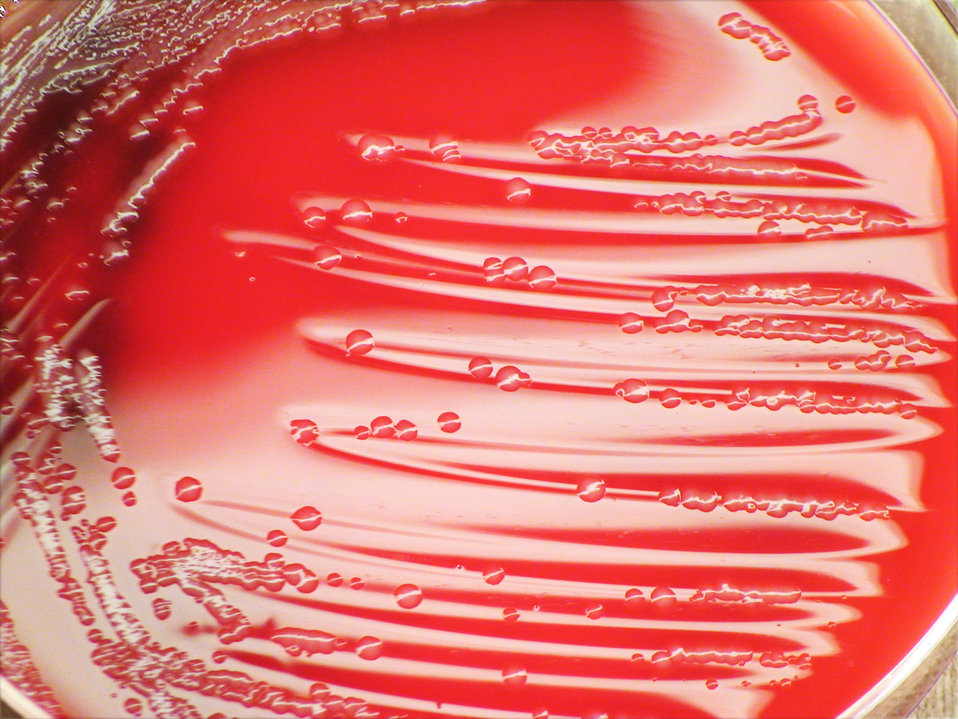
A closer view of PHIL 12453, this photograph depicts the colonial morphology displayed by Gram-negative Morganella morganii bacteria, which was grown on a medium of sheep's blood agar (SBA), for a 24 hour time period, at a temperature of 37�C.